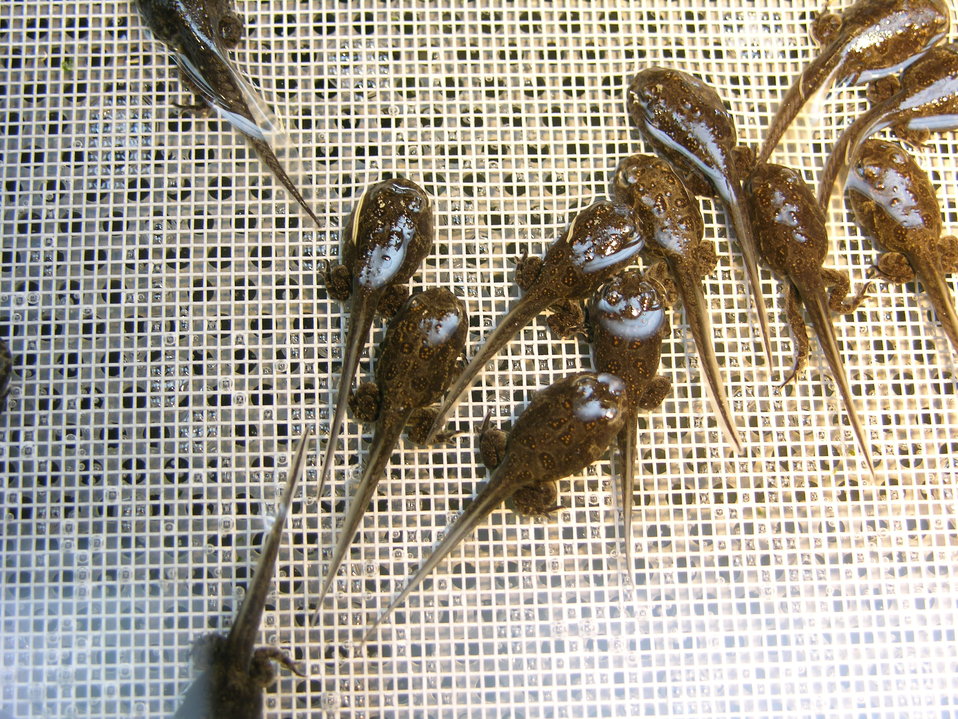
Wyoming Tadpoles

Tadpoles at the Saratoga Fish Hatchery in Wyoming.